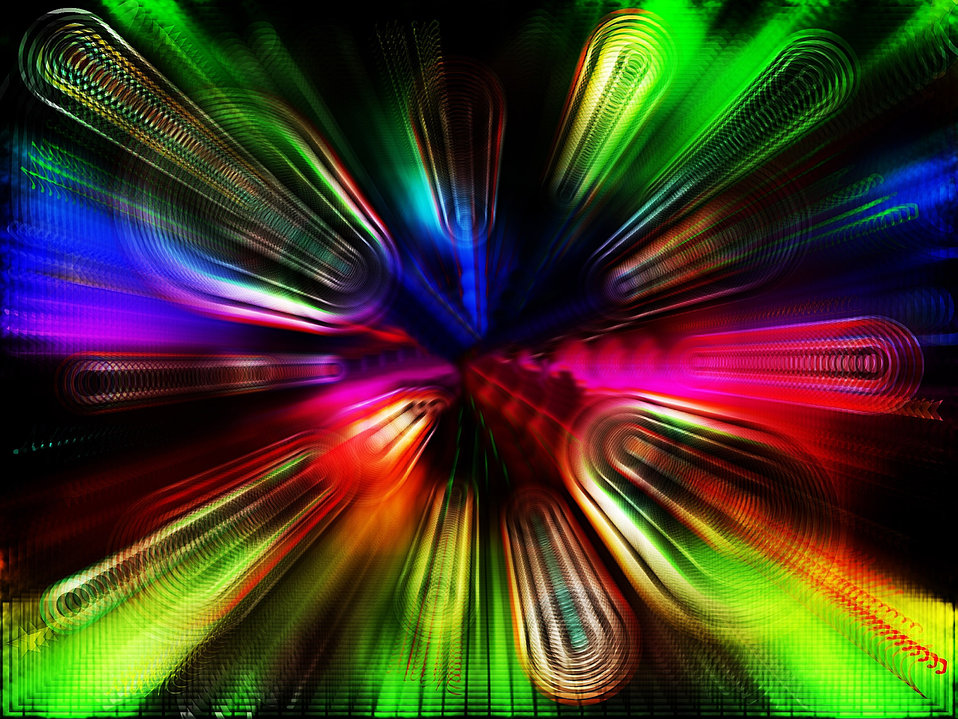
Zoom colored background.